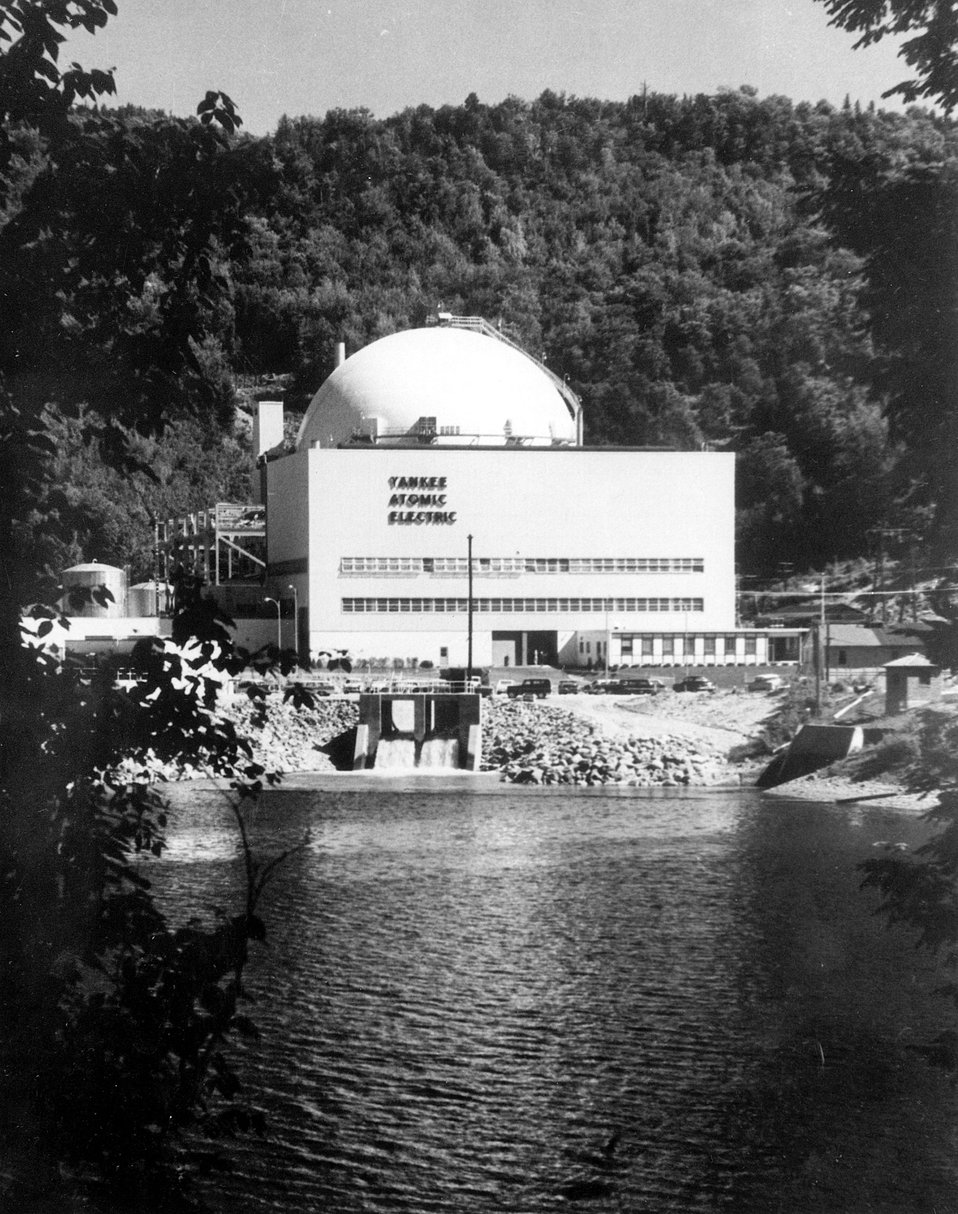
Yankee Atomic Electric surpassed design expectations during its first year of operation. The Deerfield River is in the foreground. Circa 1962.